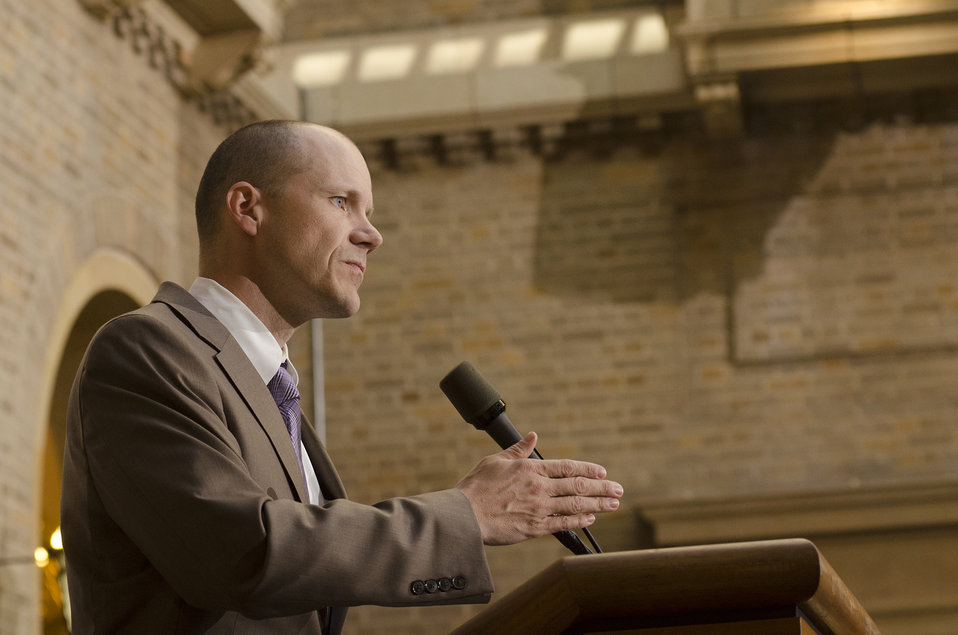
U.S. Department of Agriculture (USDA) Under Secretary Rural Development (RD) Doug O’Brien speaks at the closing session of the White House Rural Forum on Regional Innovation on the patio in the Whitten Building at USDA on Thursday, Sep. 19, 2013.